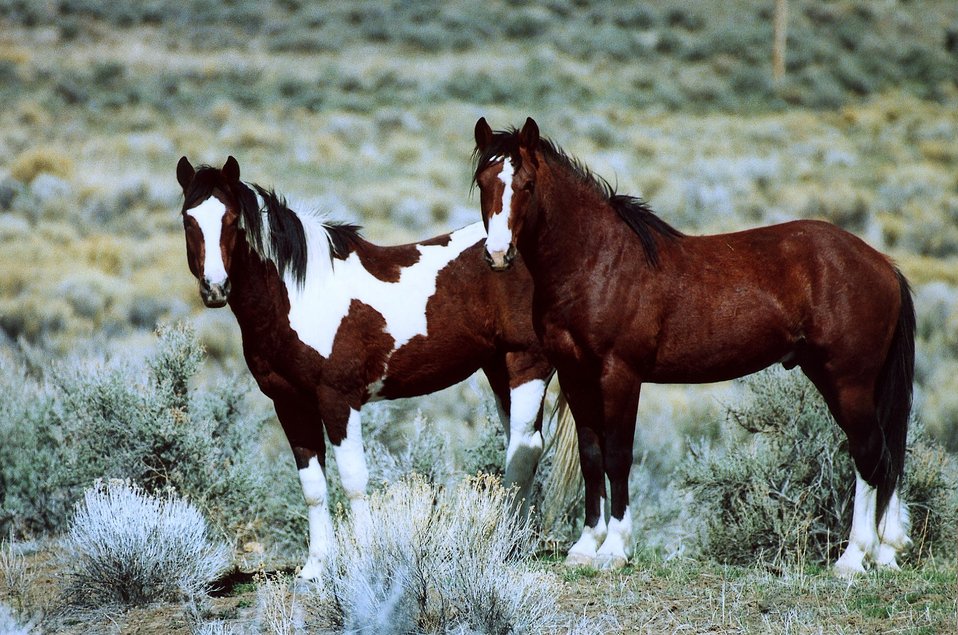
Medium shot of two bachelor stallions.